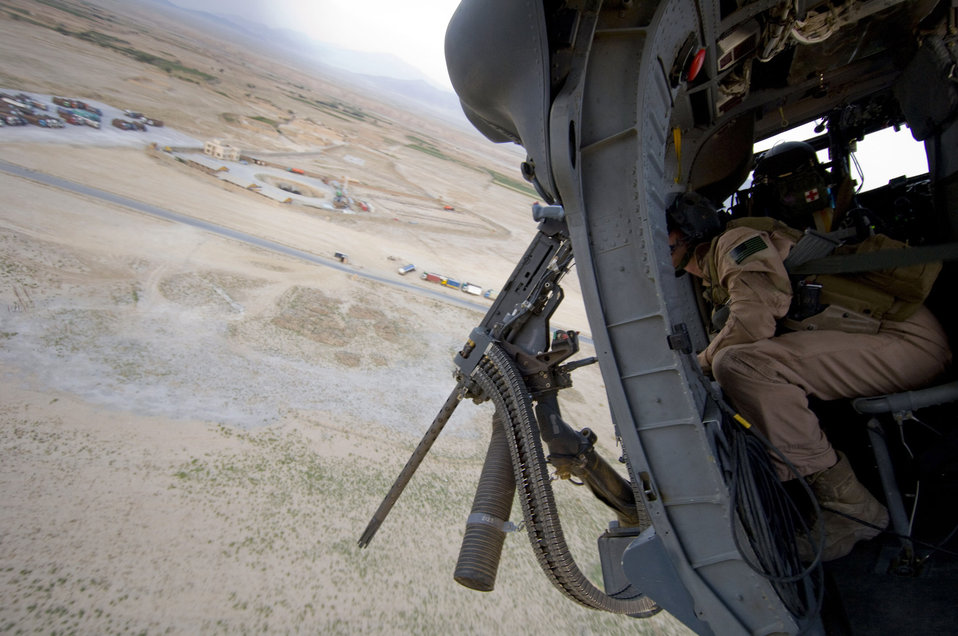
Flying with the Pave Hawks

Senior Airman Ryan Ballinger looks out over Bagram Air Base, Afghanistan, Aug. 2 after take-off. Airman Ballinger is a 33rd Expeditionary Rescue Squadron gunner, and deployed from the 33rd Rescue Squadron at Kadena AB, Japan.